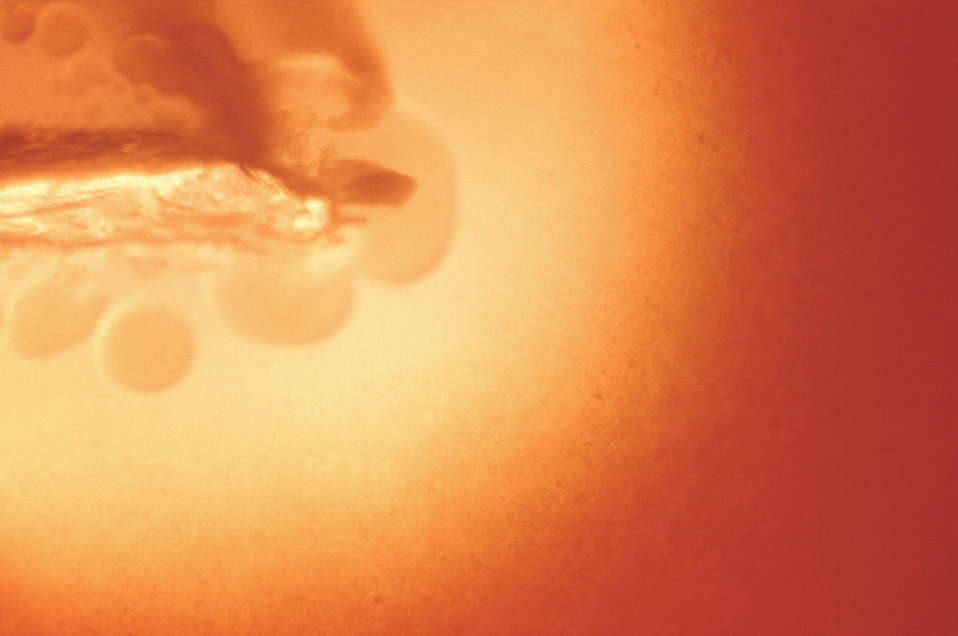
Magnified 100x, this 1977 photograph depicted a Petri dish filled with trypticase soy agar medium containing 5% defibrinated sheep's blood, i.e., blood agar plate (BAP). After having been inoculated with Group A Streptococcus pyogenes (GAS) bacteria using a wire loop stab technique, the BAP was incubated in a carbon dioxide enriched atmosphere at 35oC for 24 hours. The culture grew bacterial colonies along the edge of the stab, a number of which were seen here. The characteristic color changes, i.e., a colorless region around the stabbed area containing colonies of GAS in which the red blood cells in the blood agar medium had been destroyed, or "hemolyzed", indicated that these bacteria were indeed beta-hemolytic in nature.Infection with GAS can result in a range of symptoms:- No illness- Mild illness (strep throat or a skin infection such as impetigo)- Severe illness (necrotizing faciitis, streptococcal toxic shock syndrome)